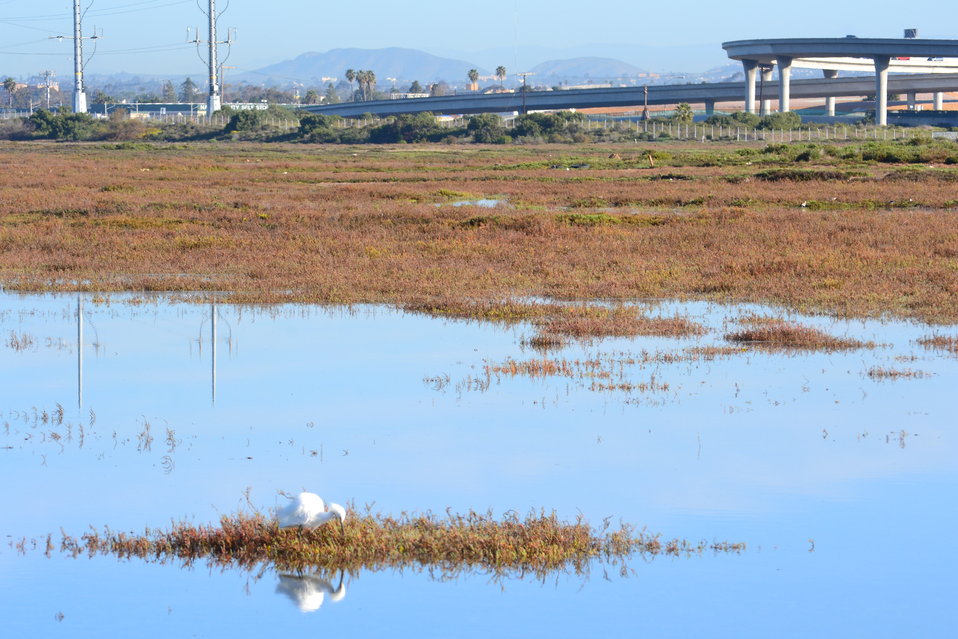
Egret hunts within the marsh, coexisting with human industrialization nearby

During an extreme high tide event on February 17, 2011 the bay water creeped into Sweetwater Marsh to 6.9 feet! Pictured here is Sweetwater Marsh with HWY 54/Interstate 5 highway connections that border the eastern edge of the refuge